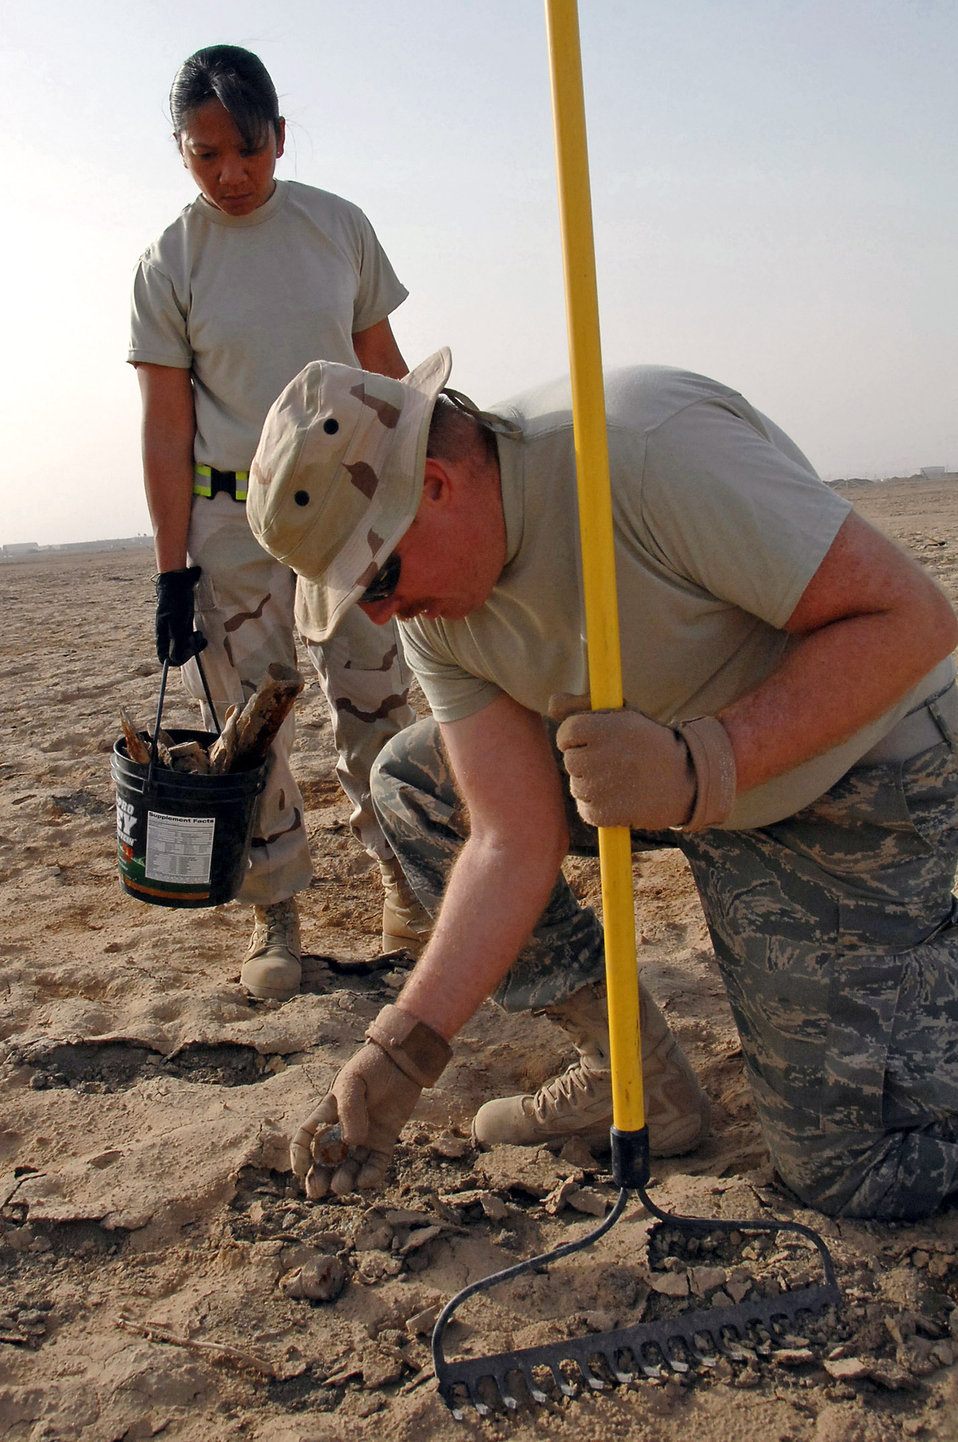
Picking up ordnance debris

Master Sgt. Curtis Keel uncovers ordnance debris as Tech. Sgt. Maria Adams observes March 26 at Ali Base, Iraq. Explosive ordnance disposal team members and augmentees scoured 159 acres of unexploded ordnance fields picking up debris and marking un-removable items for detonation. The Airmen are members of the 407th Air Expeditionary Group. Sergeant Keel is a EOD member deployed from Kirtland Air Force Base, N.M. and Sergeant Adams is a supply craftsman deployed from Spangdahlem AB, Germany.